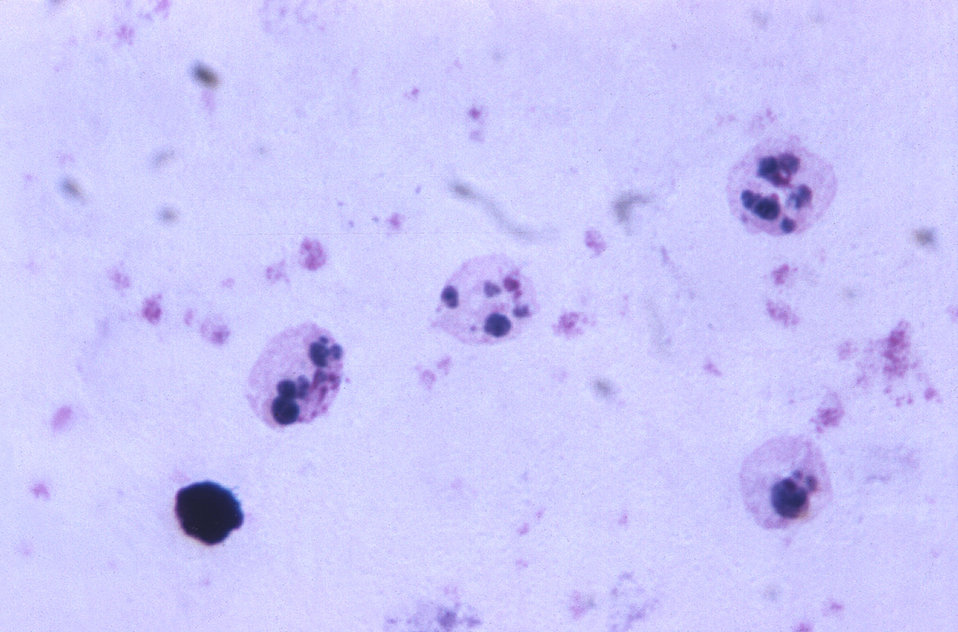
This micrograph depicts the appearance of a well-stained slide using the Giemsa staining technique.